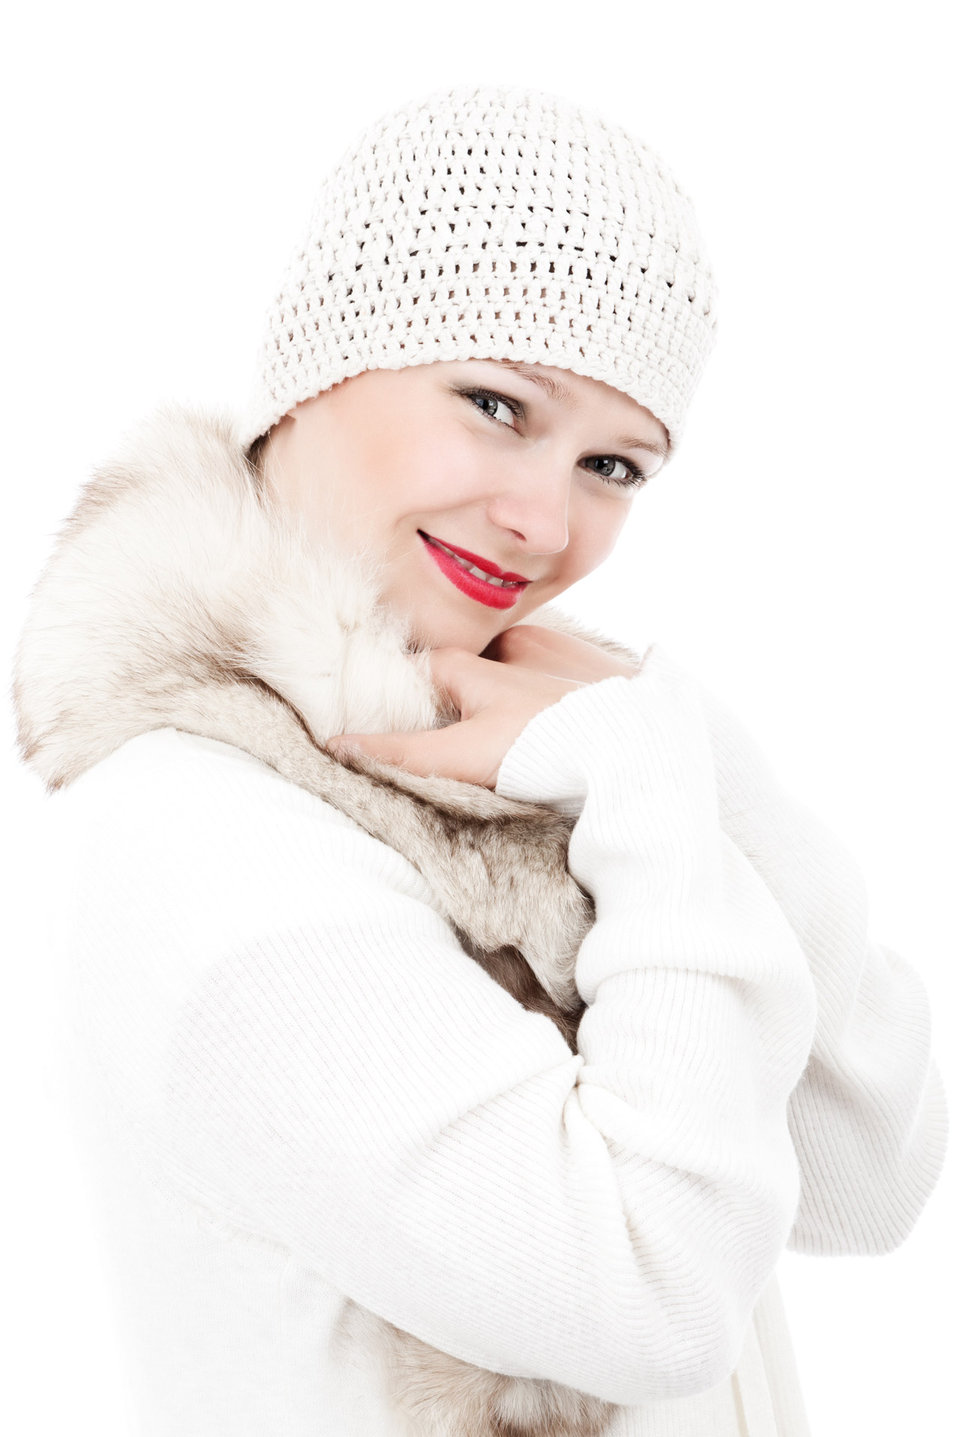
Female model in winter

Young woman in winter clothes.